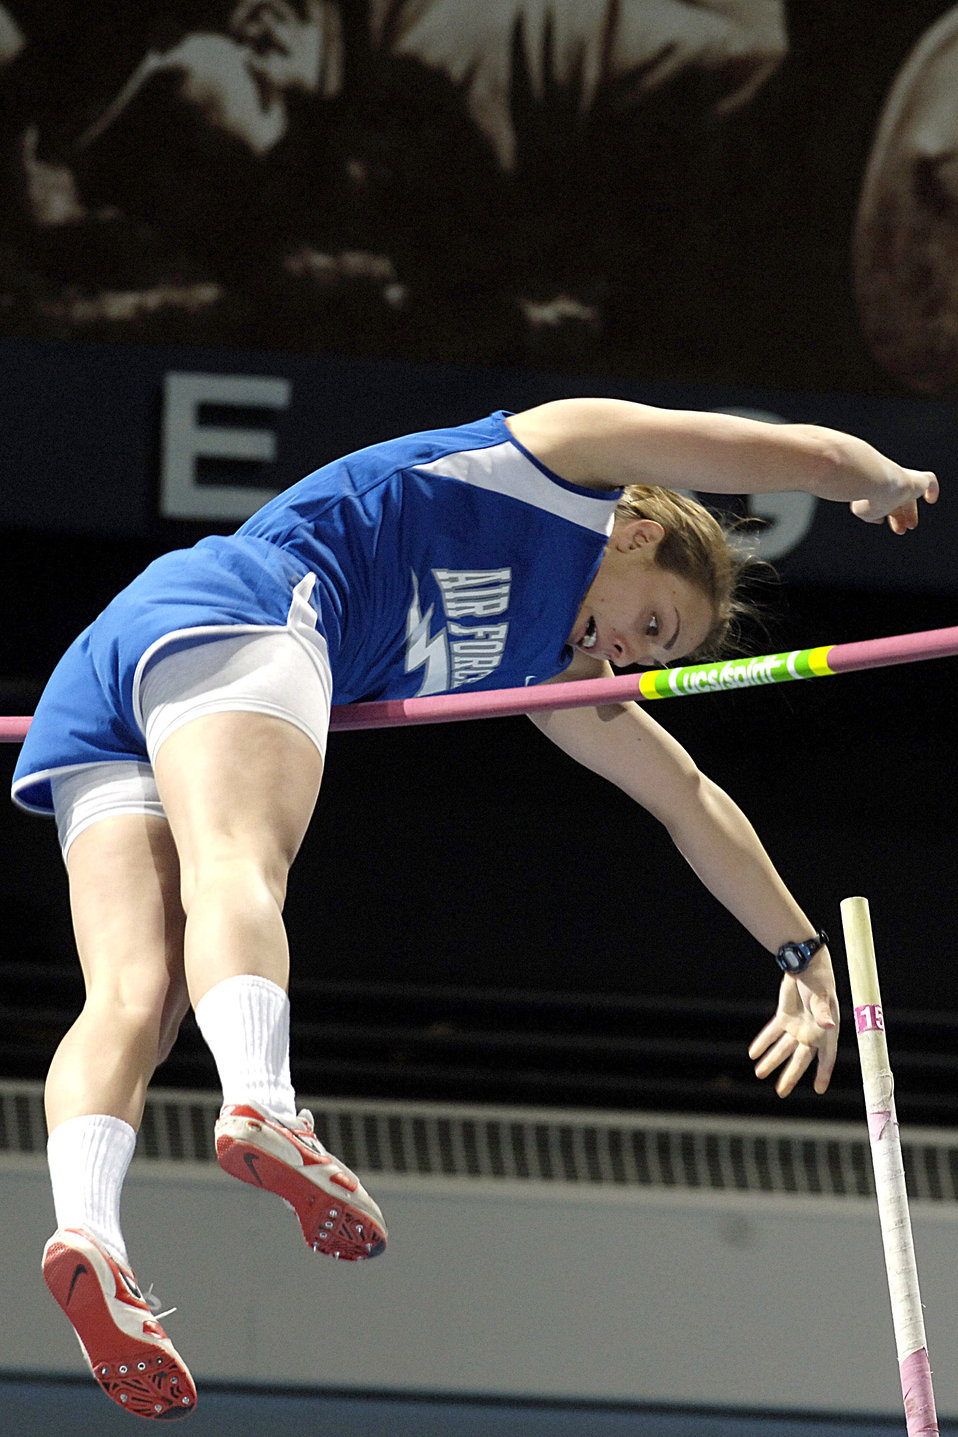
Pole vault

U.S. Air Force Academy Falcon freshman Rachel Simmons competed in the pole vault as the Air Force track and field team officially opened the season by hosting the annual Air Force All-Comers Meet Jan. 13 at Colorado Springs, Colo. Air Force claimed a share of the top three spots of the pole vault, as sophomore Melissa Beerse, Simmons and freshman Rachel Miller finished first, second and third (tied), respectively, with heights of 12 feet 5 1/2 inches, 11'11 3/4